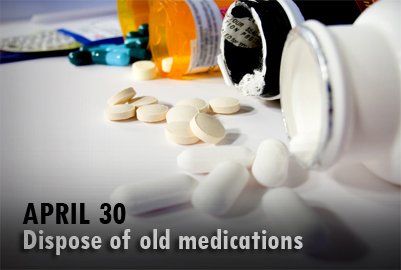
National medication take back day

April 30, 2011, is National Medication Take Back Day. It is a convenient and environmentally safe way for people to safely dispose of unwanted and outdated medications at many police departments, universities, hospitals and military installations across America.